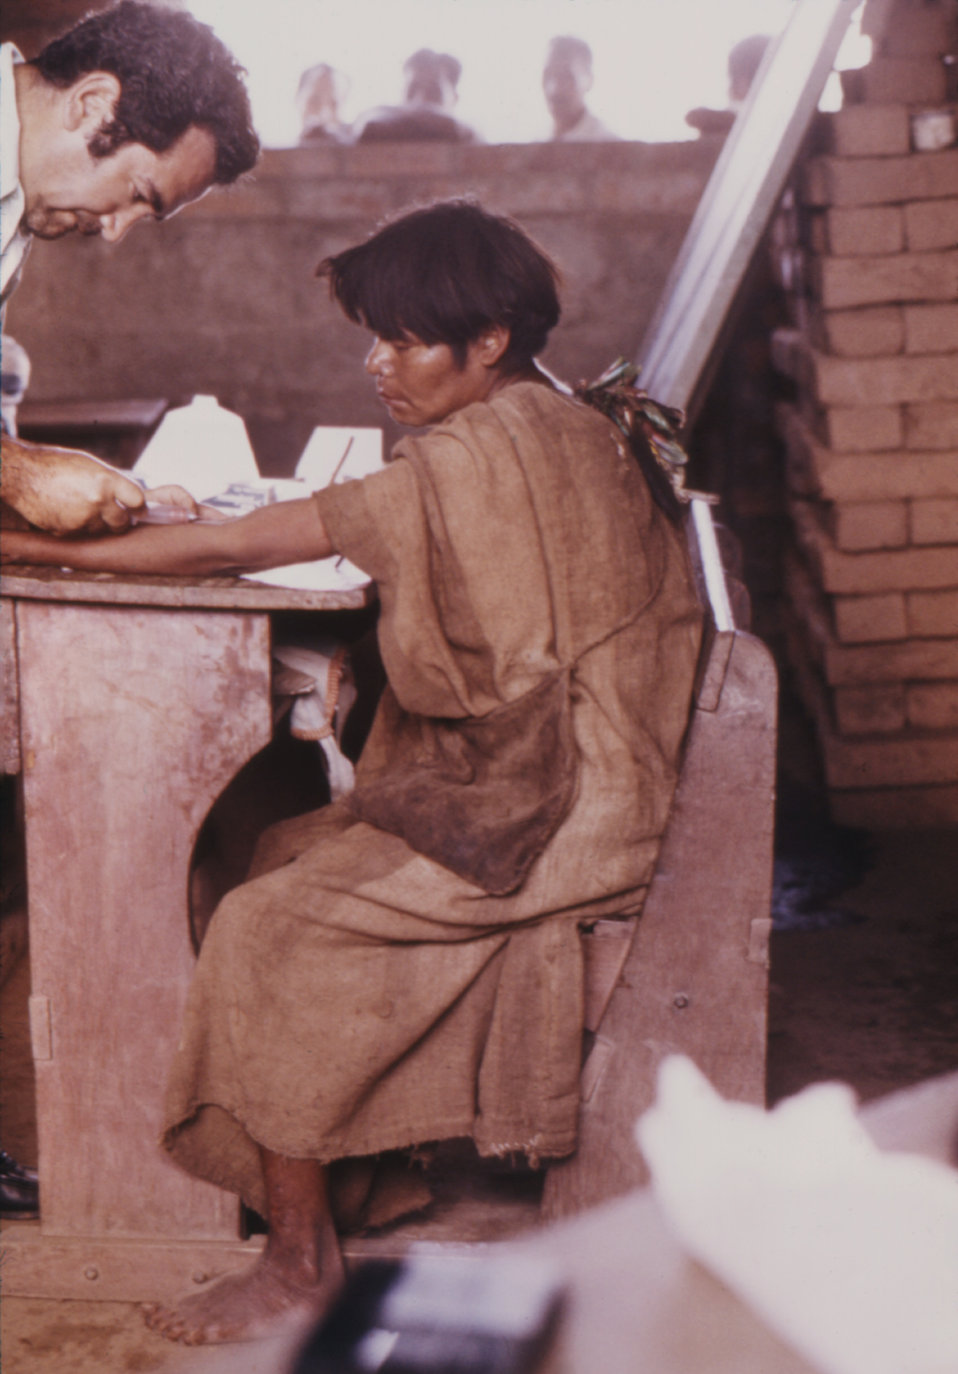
This photograph shows a member of a 1976 CDC field assignment taking a blood sample of a patient in Peru. See PHIL 14497, for a black and white version of this image.